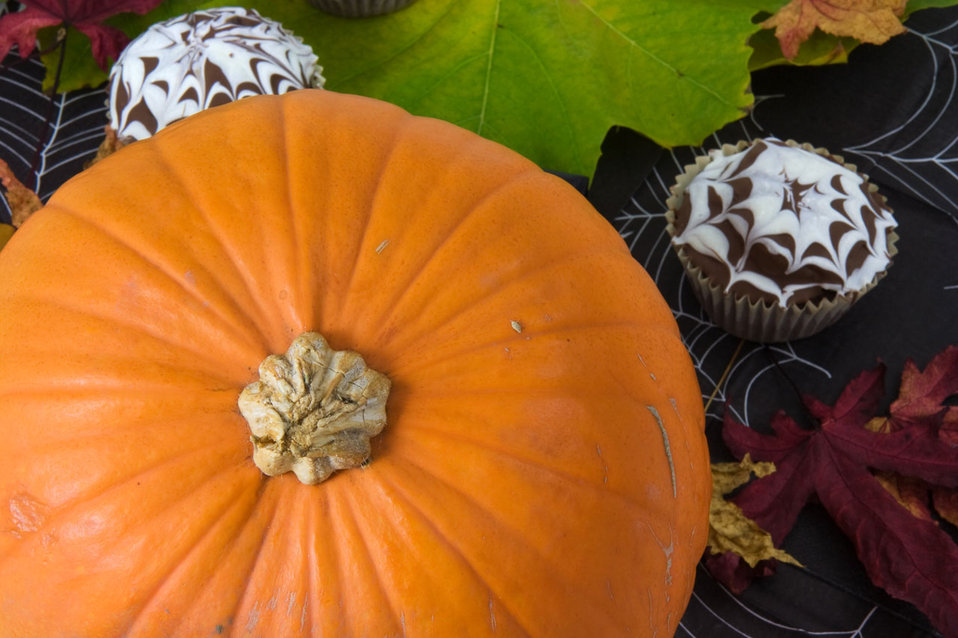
Halloween theme

Halloween autumn theme.